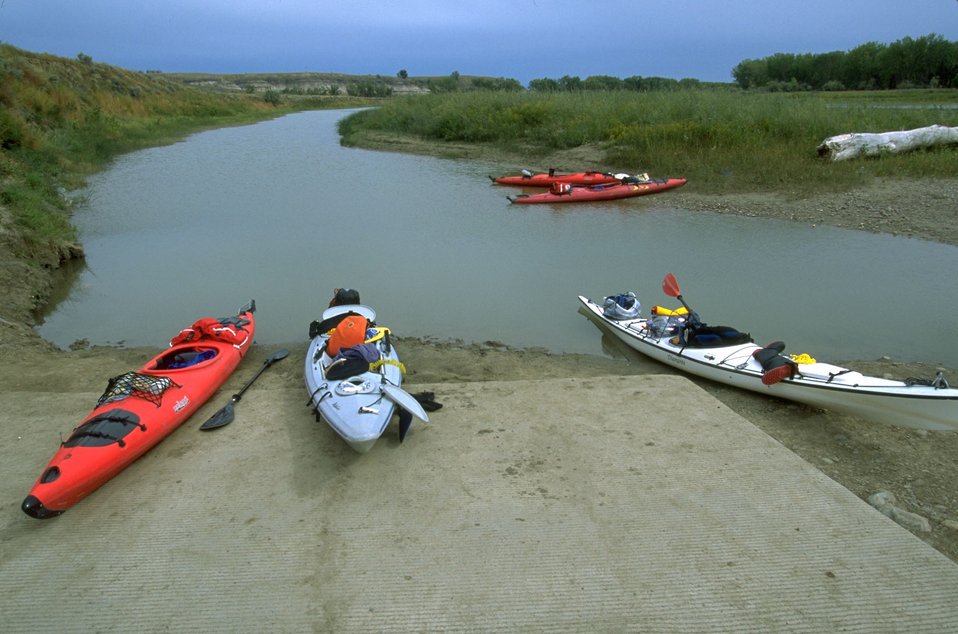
Boats at Coal Banks Landing